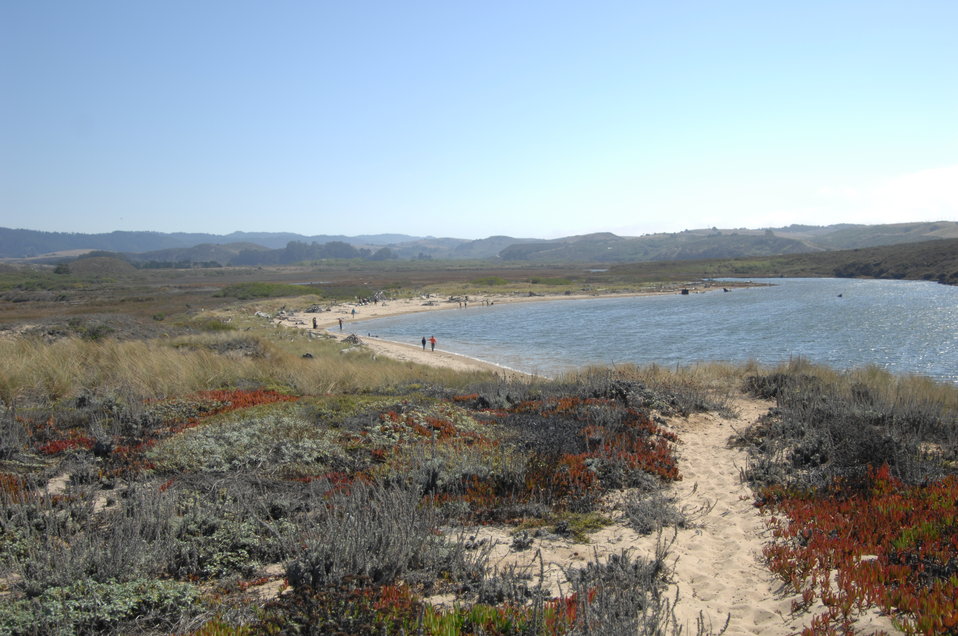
Pescadero Lagoon 1

Pescadero Lagoon is unique. It is a large central coast estuary that retains much of its natural variability. Currently the sandbar generally forms in late fall to early winter. Prior to the early 1990’s the sandbar generally formed in late spring/early summer. Low freshwater inflow along with the rapid evacuation of surface water rich in oxygen and the release of hydrogen sulfide gas, seem to be the causes of a fish kill.